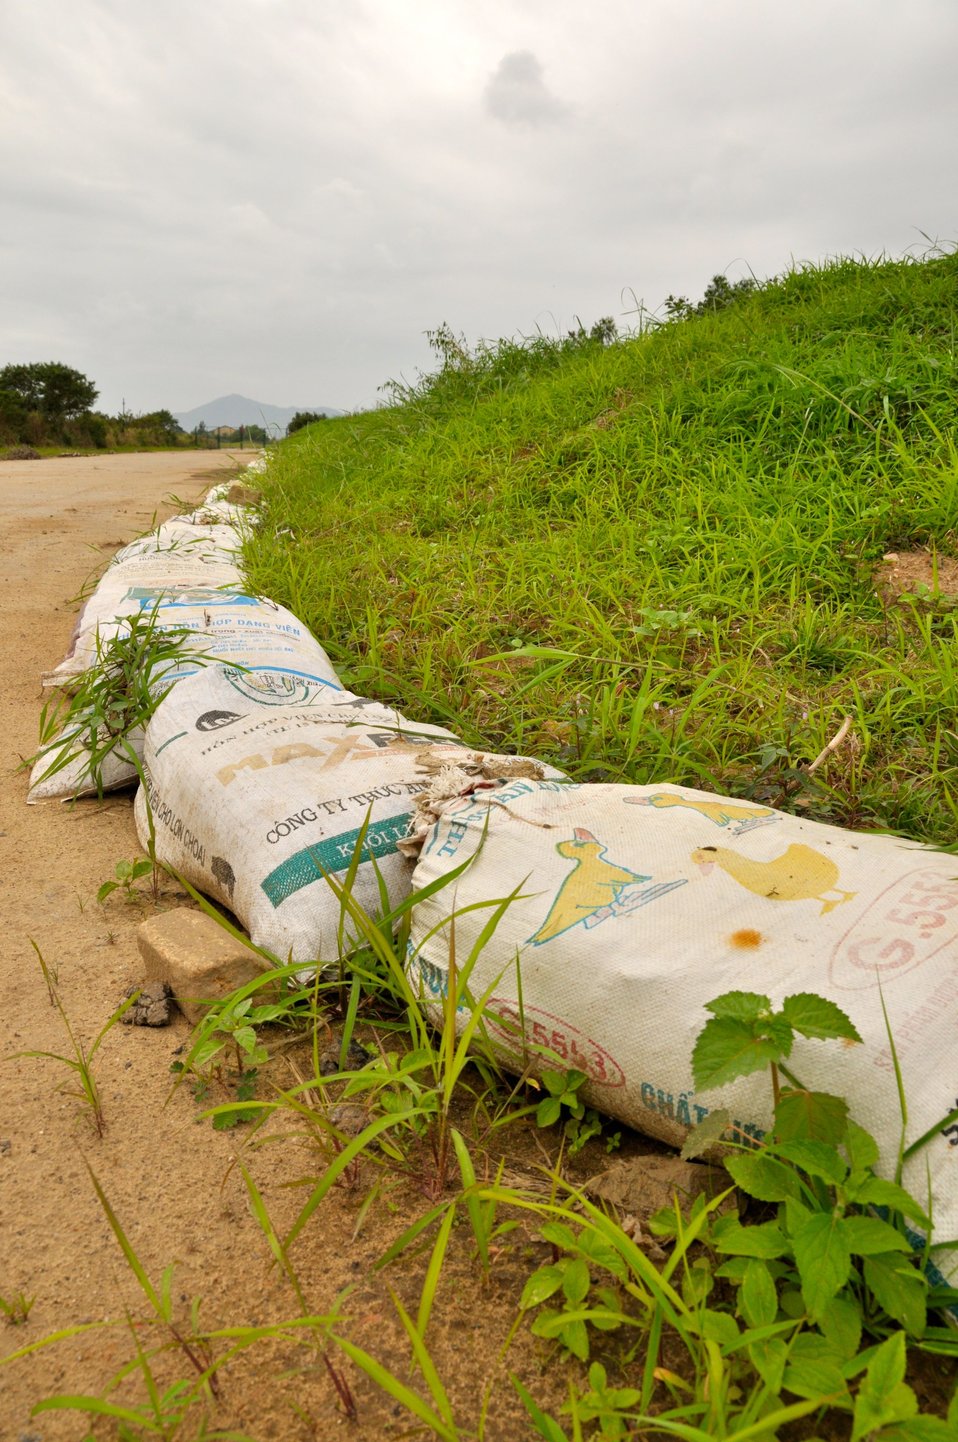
Site Preparation for Environmental Remediation of Dioxin Contamination at Danang Airport

Danang Airport, January 22, 2013